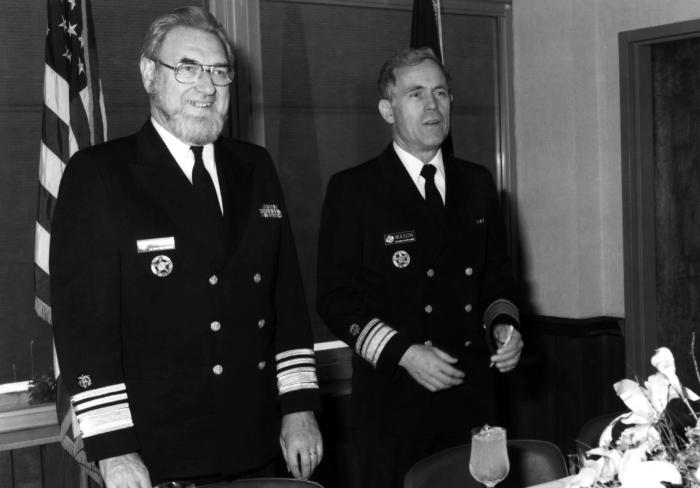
Former Surgeon General, C. Everett Koop (Lt), was shown presenting Assistant Surgeon General James O. Mason with the Public Health Service (PHS) Distinguished Service Medal (DSM), for his superior service as Acting Assistant Secretary for Health, February - November, 1985.